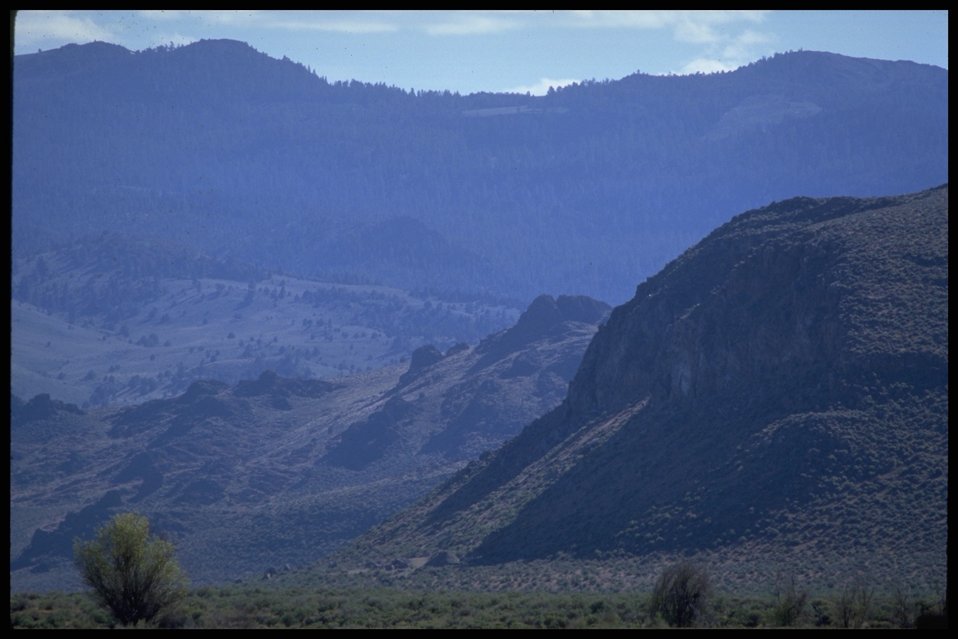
Scenic view of desert, Lakeview District.